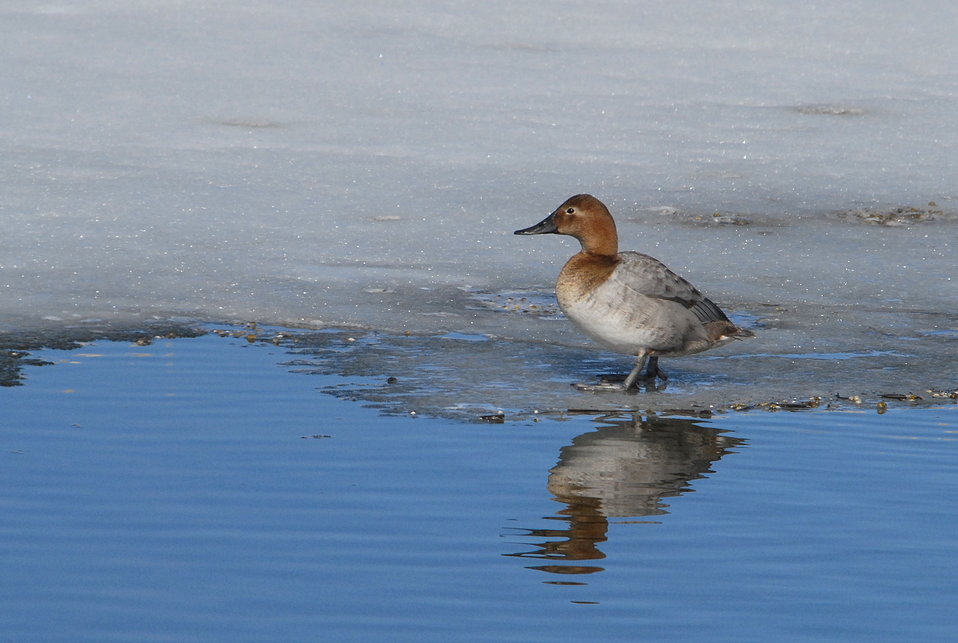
Canvasback (female)